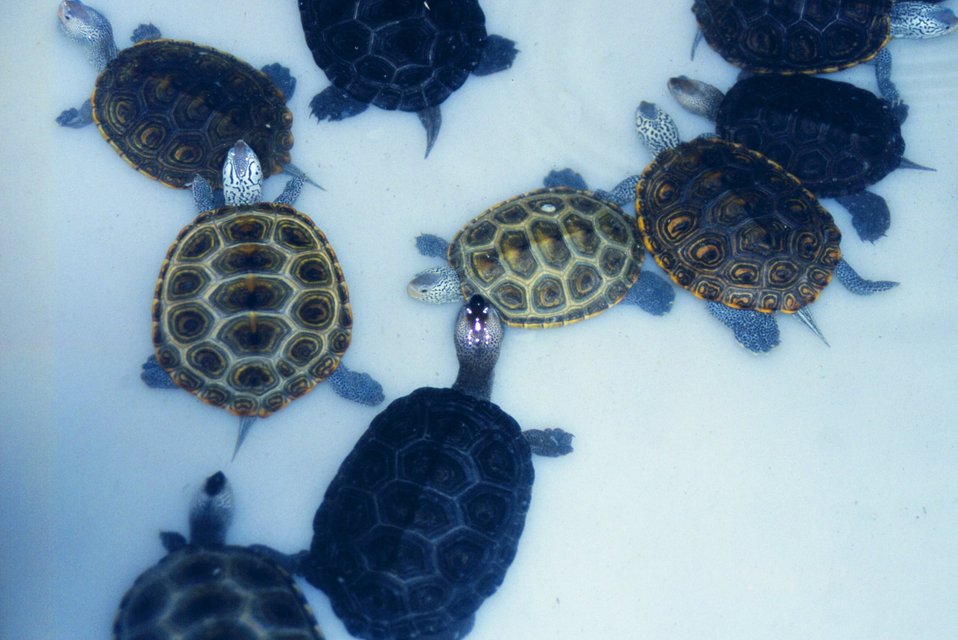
Female diamondback terrapins, Malachlenys terrapin.